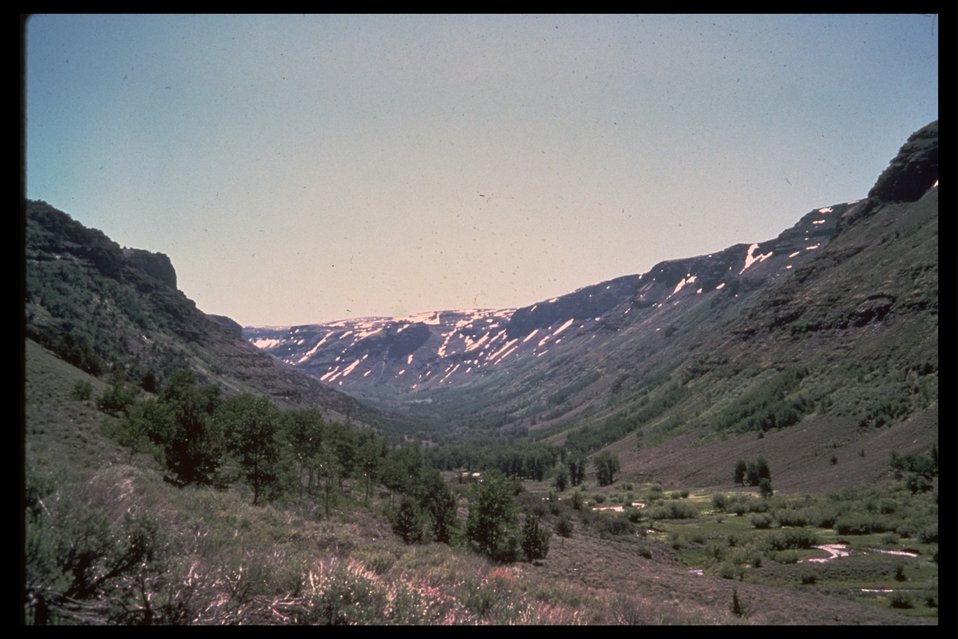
Bottom of Little Blitzen Gorge. (WSA 2-86F)